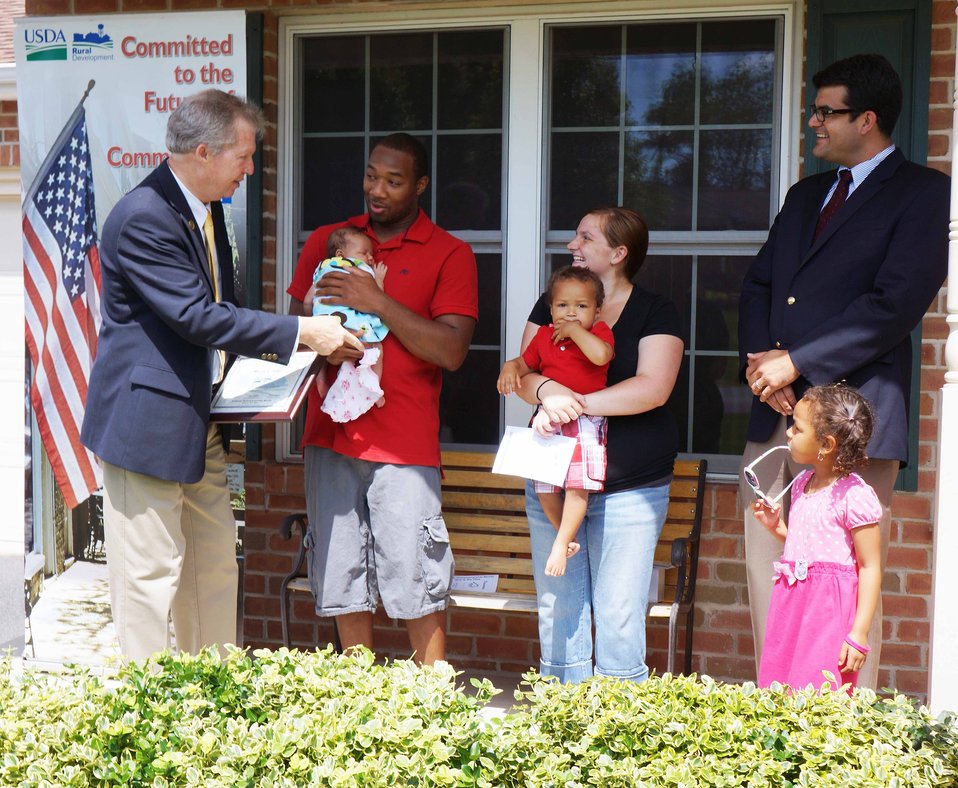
U.S. Department of Agriculture (USDA) Rural Development (RD) Pennsylvania State Director Tom Williams (far left) and USDA Acting Administrator for Rural Business Services John Padalino (far right), celebrated National Homeownership Month with RD Housing Loan Recipient Willie Hall and his family at their new home in Chambersburg, PA.